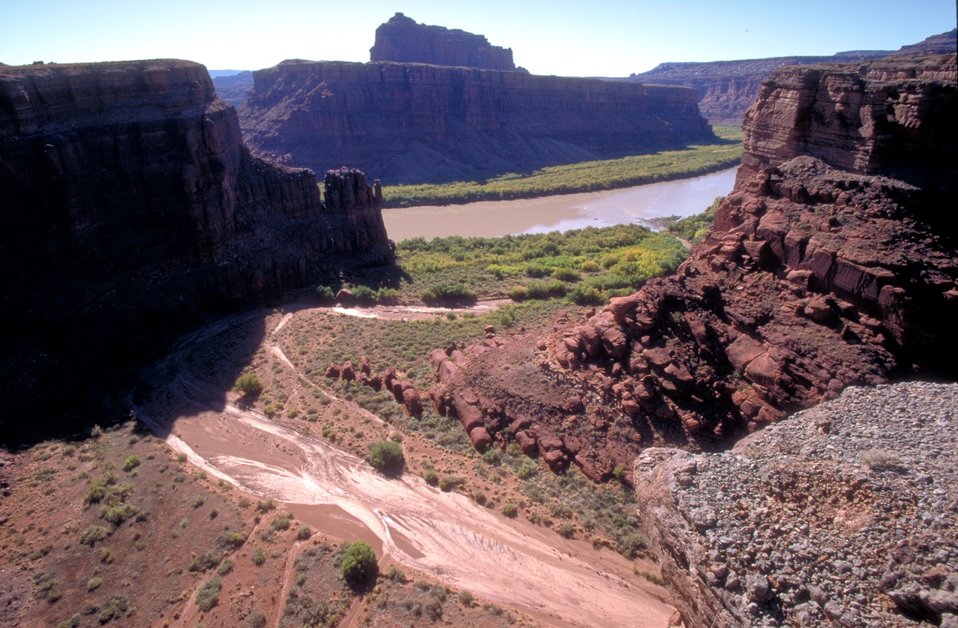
Colorado River near Moab, Utah.